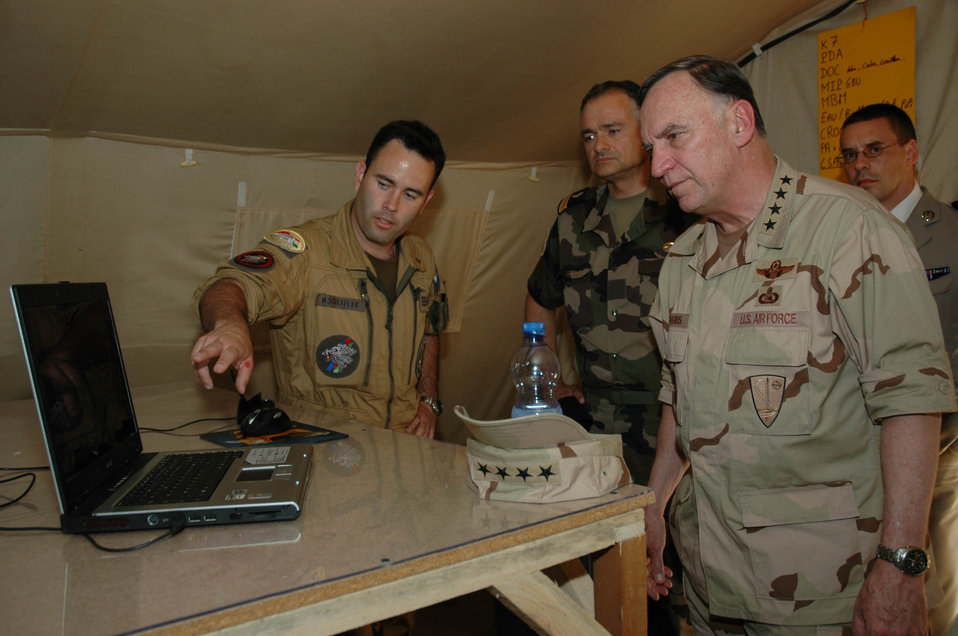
USAFE commander reviews past year in command

French Air Force Capt. Claudio Scheffler briefs Gen. William T. Hobbins, U.S. Air Forces in Europe commander, on the Mirage unit deployed to Dushanbe, Tajikistan, May 19. General Hobbins stopped through Dushanbe to visit with the deployed French unit that supports air operations for International Security Assistance Forces. Over the past year, General Hobbins has visited more than 30 nations.